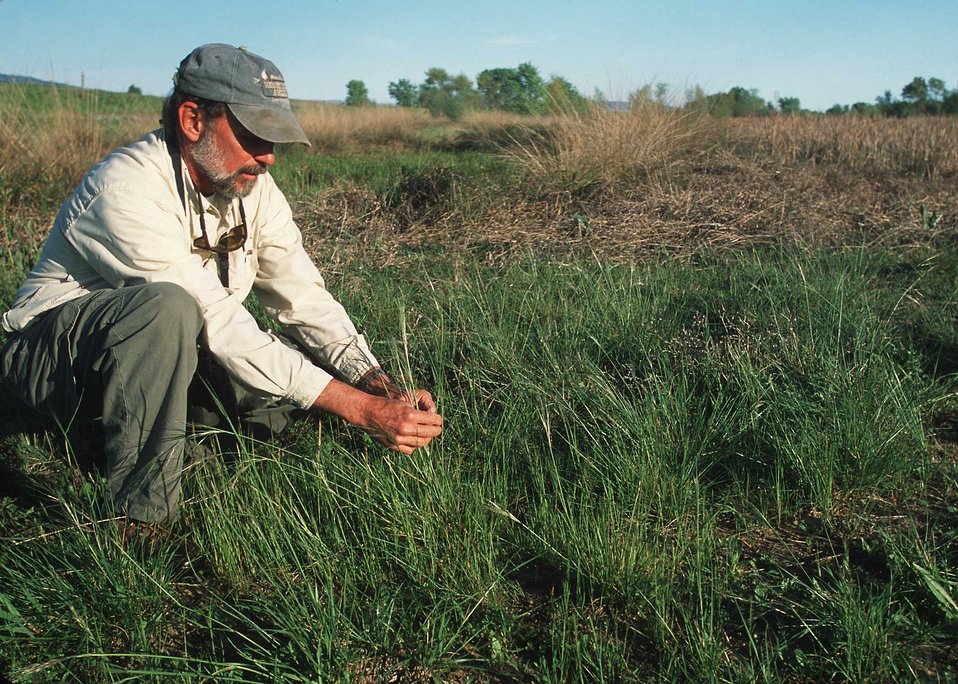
Yolo County farmer looks at native grass planting.